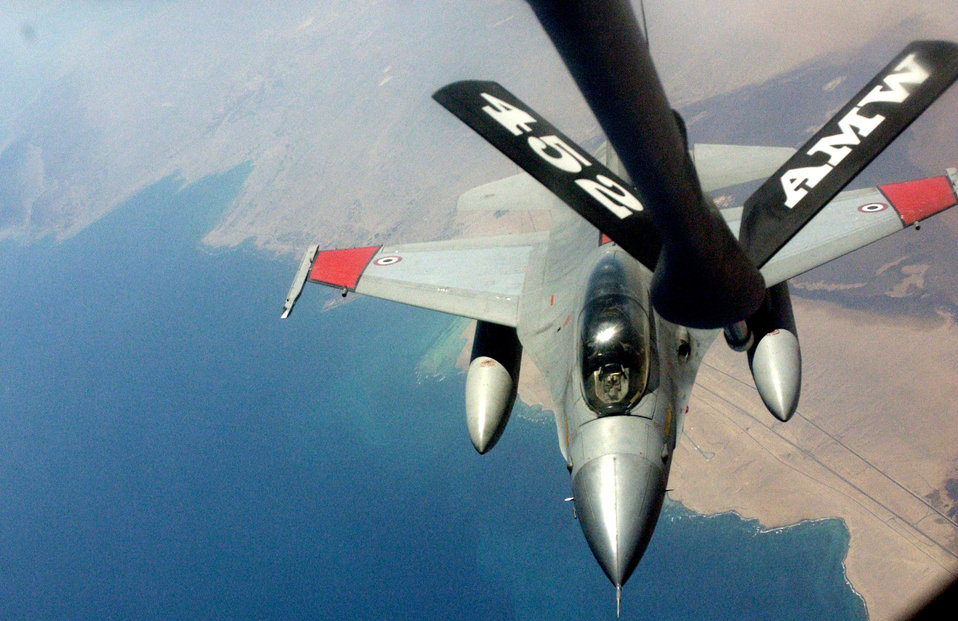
Reservists train with Egyptian airmen

An Egyptian air force F-16 Fighting Falcon prepares to make contact with a KC-135 Stratotanker from March Air Reserve Base, Calif., during inflight refueling training. A contingent of reservists from the 336th Air Refueling Squadron at March ARB are providing aerial refueling training for Egyptian pilots.